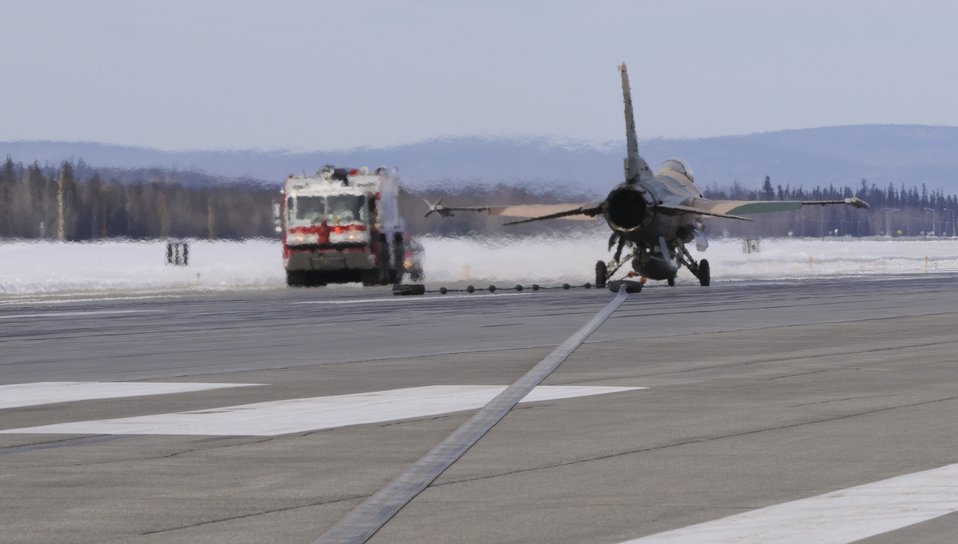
F-16 uses emergency break

An F-16 Fighting Falcon, 18th Aggressor Squadron, sits on the runway after engaging an arresting cable at a speed of 124 knots March 25, 2009, Eielson Air Force Base, Alaska. The cable is similar to the ones used on Naval Aircraft carriers and must be certified once a year to ensure proper functioning in the event of an emergency.